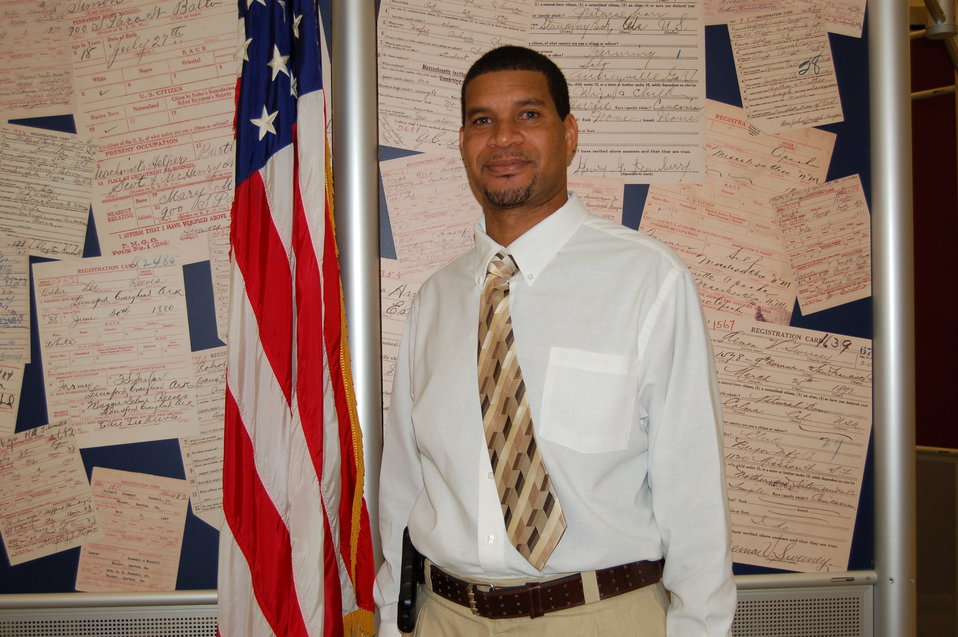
New Citizens